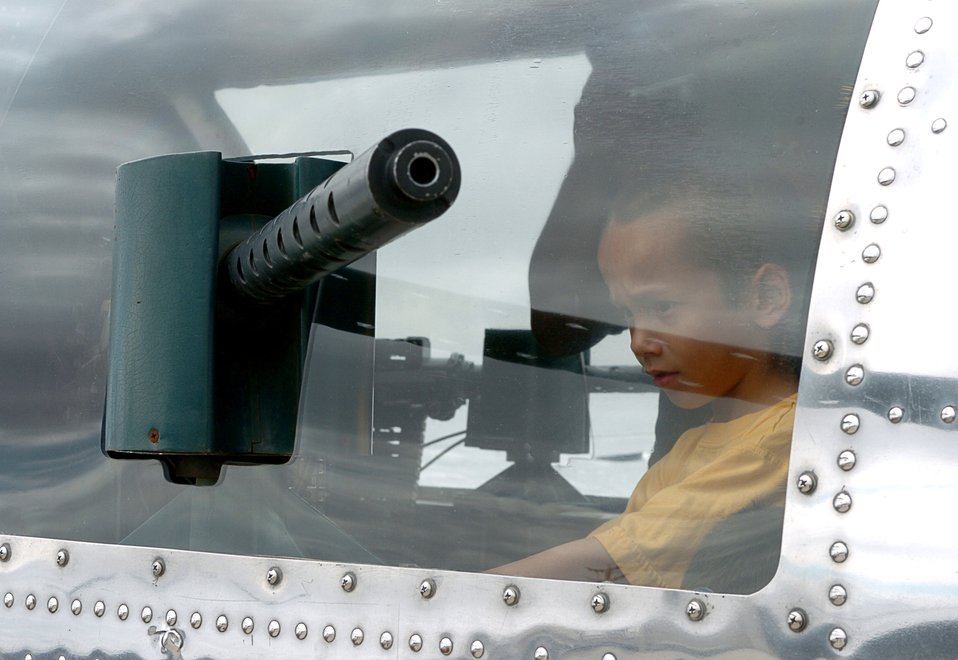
Air Force Week

A young boy checks out the gun in a 1944 B-17 during